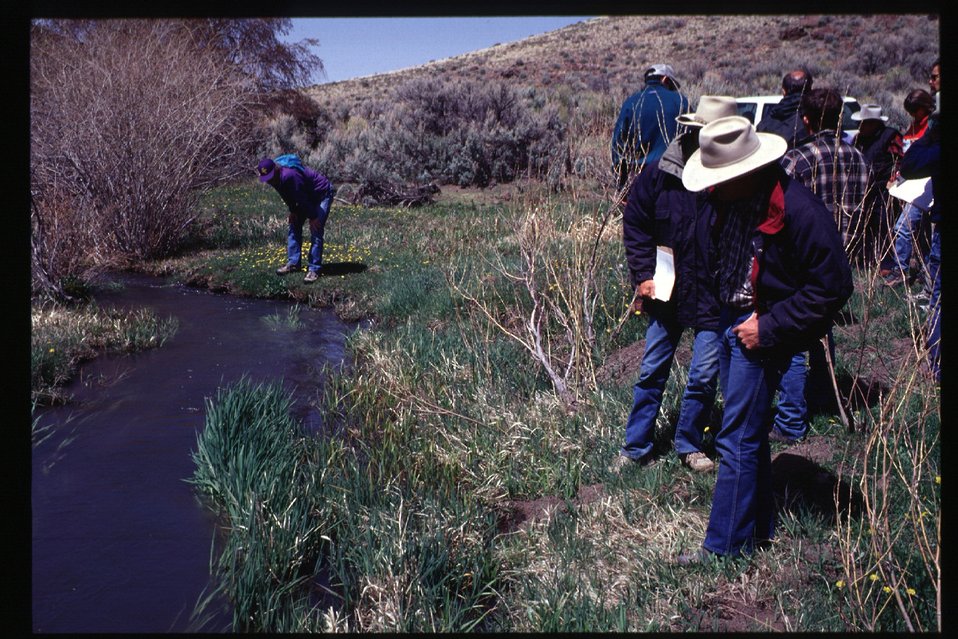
Riparian RACS Tour on Range Health Assessment Owyhee Field Office LSRD Lower Snake River District